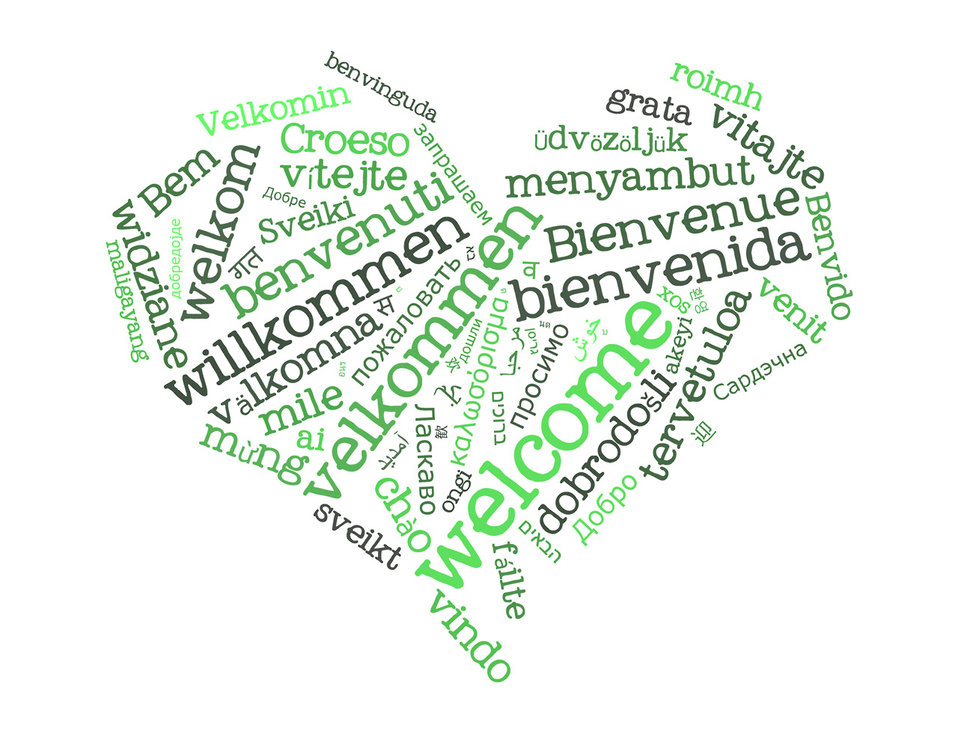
Welcome heart green

Word cloud in a shape of heart with a word of welcome in different languages.